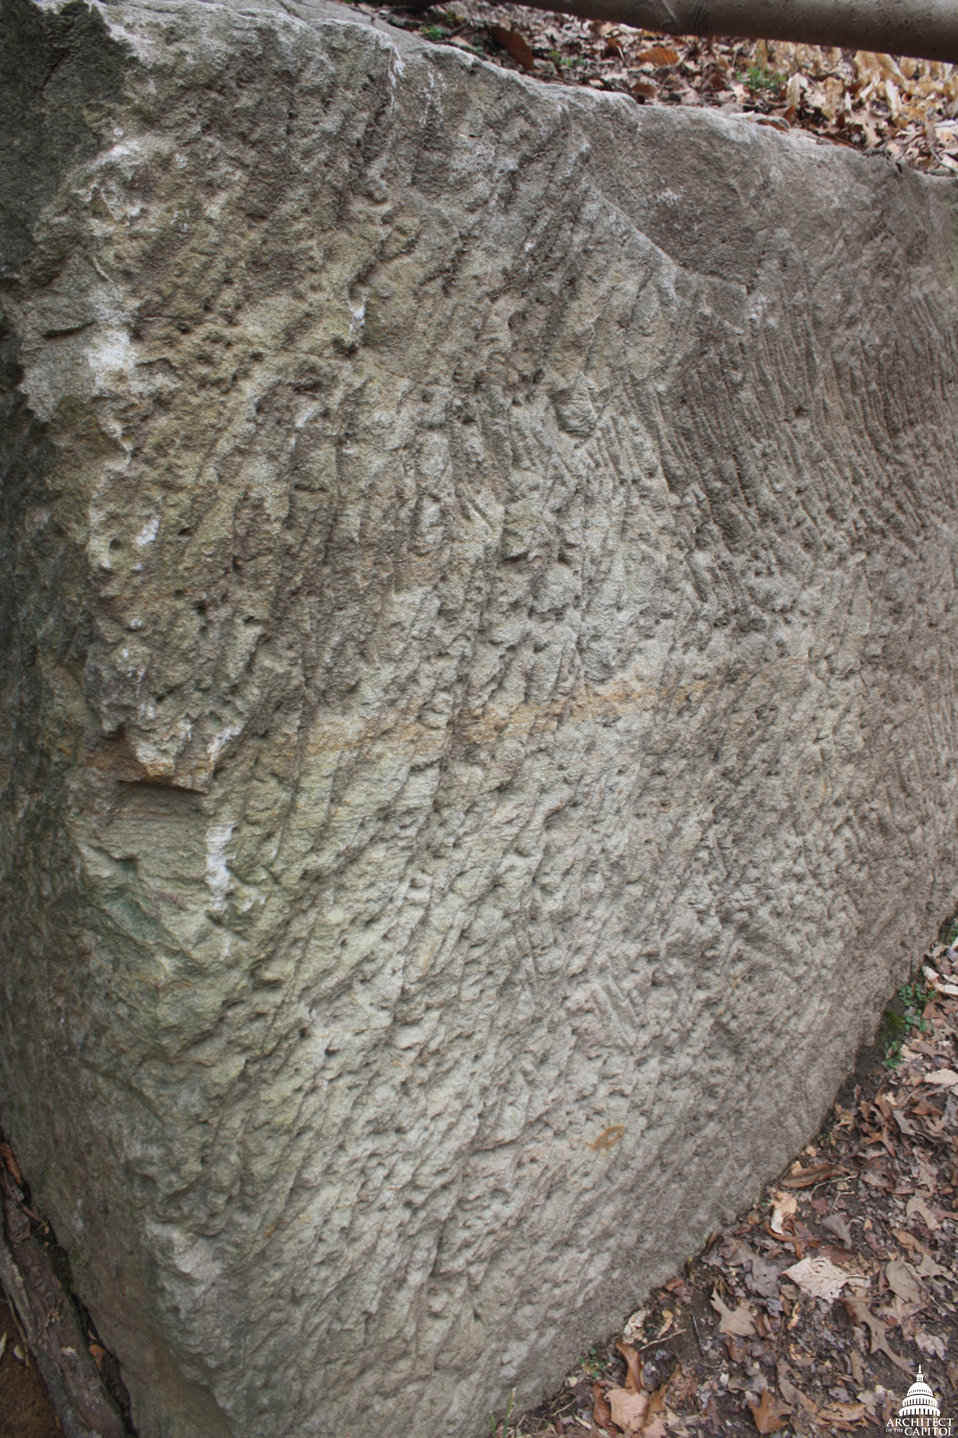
Tool marks visible in stone at Government Island

Government Island is an historic 18th and 19th century quarry site that provided Aquia sandstone for the construction of the White House and the U.S. Capitol building. During George Washington's Presidency, Government Island was purchased by Pierre L'Enfant on behalf of the federal government in 1791 to provide stone to build the nation's new capital city - Washington, D.C.